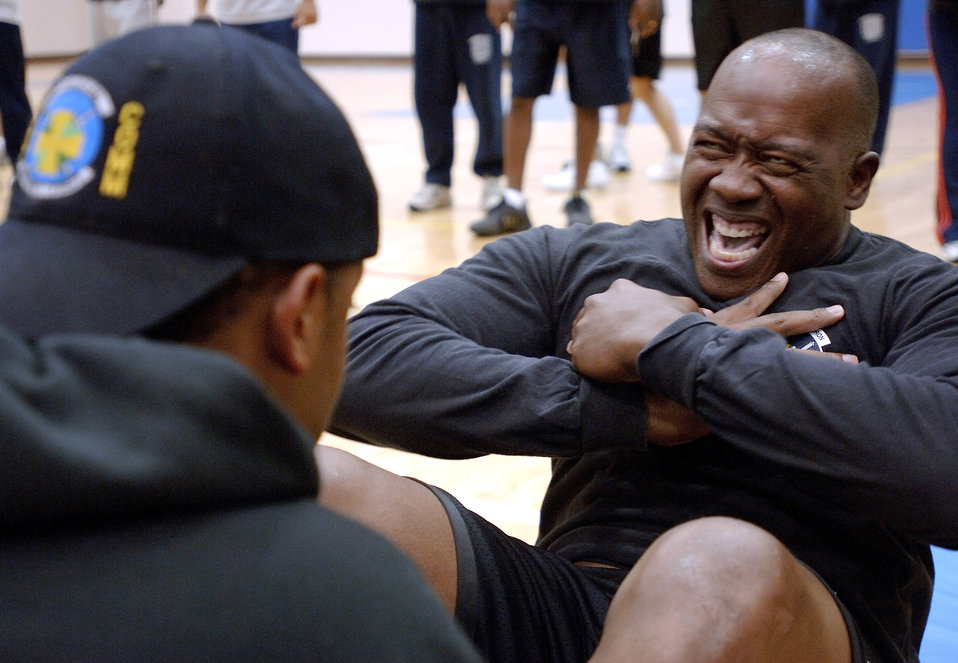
Fit to fight

LANGLEY AIR FORCE BASE, Va. (AFPN) -- Lt. Col. Michael Black squeezes out sit-ups during a base fitness challenge. The 1st Mission Support Group held a challenge testing each squadron's abilities at push-ups, sit-ups, running and tug-of-war. Colonel Black is commander of the 1st Communications Squadron.